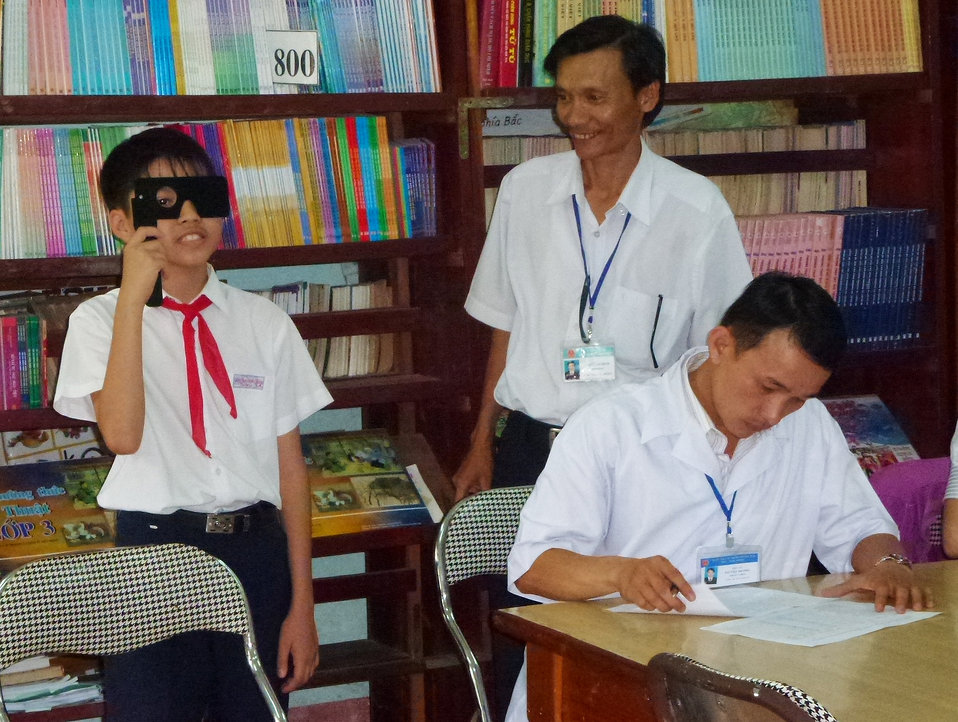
Eye screening at Phan Dinh Phung Primary School

USAID and HKI support refractive error screening examination for students at Phan Dinh Phung Primary School in Kon Tum.